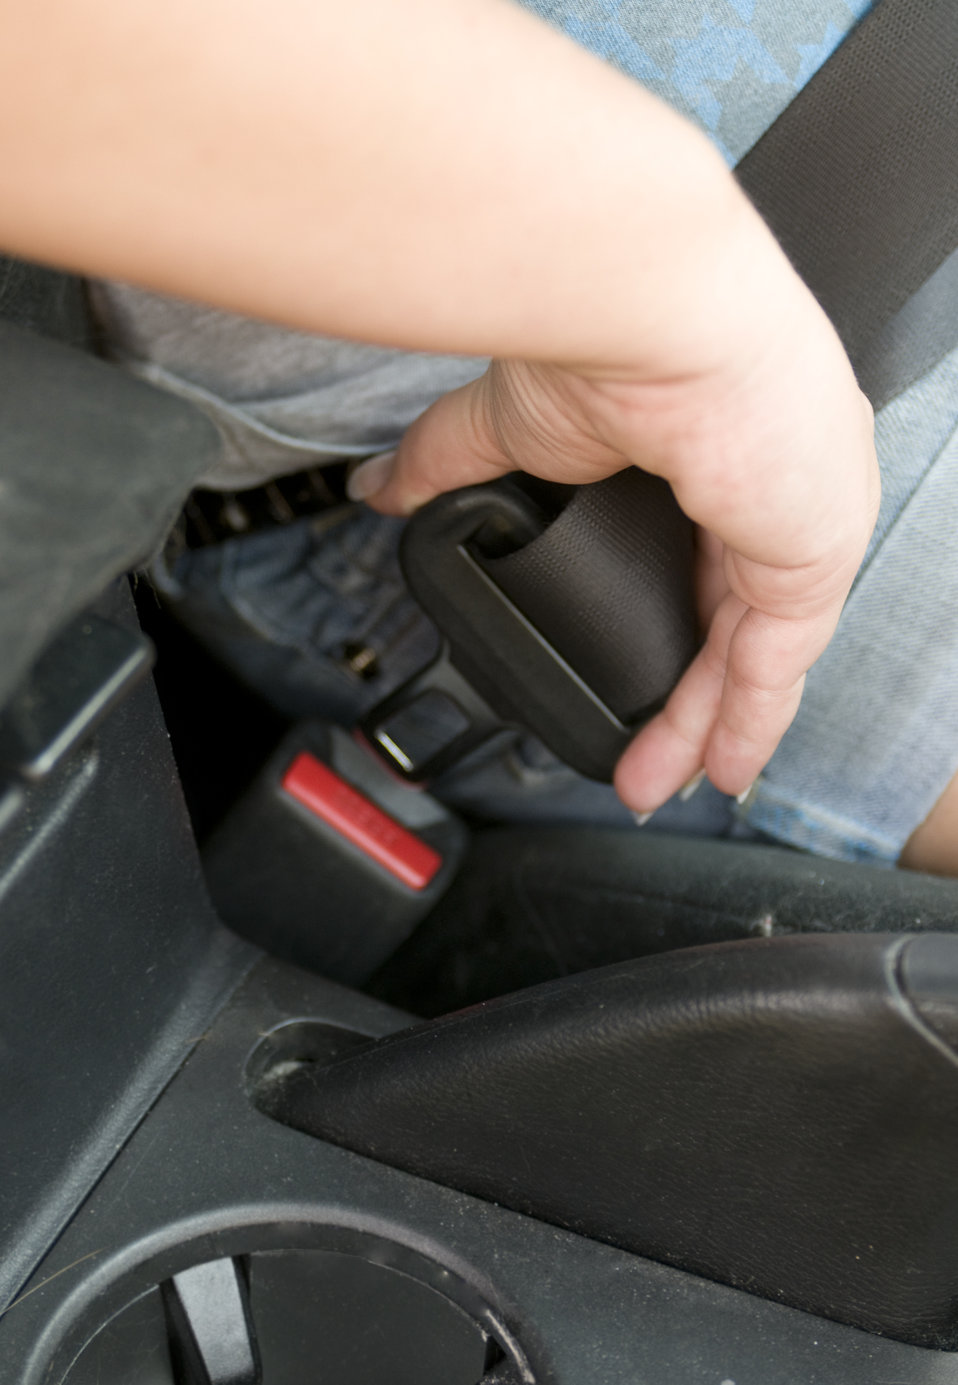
Here we see the right hand of a teenage motor vehicle operator, seated in the driver's seat, and securing her seat belt latch before embarking on a drive.